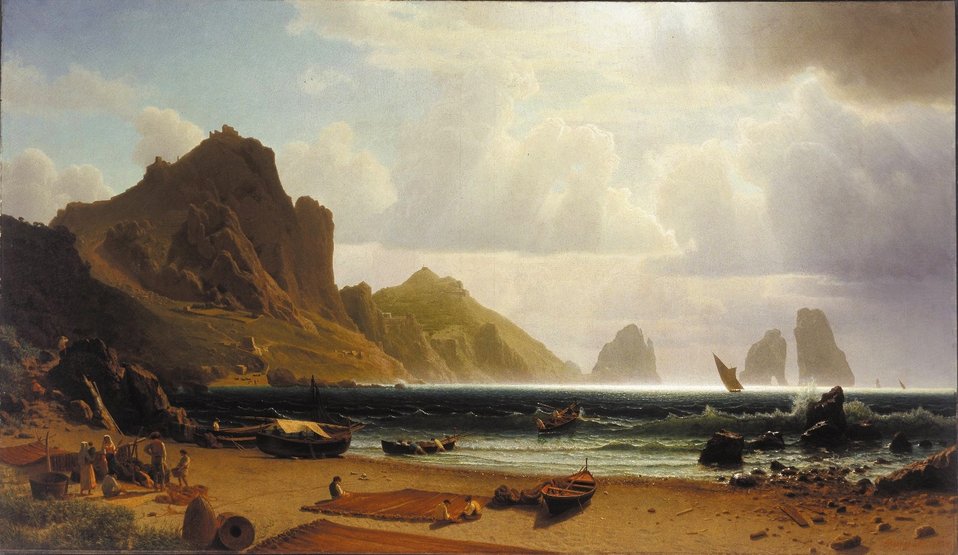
Albert Bierstadt - The Marina Piccola, Capri